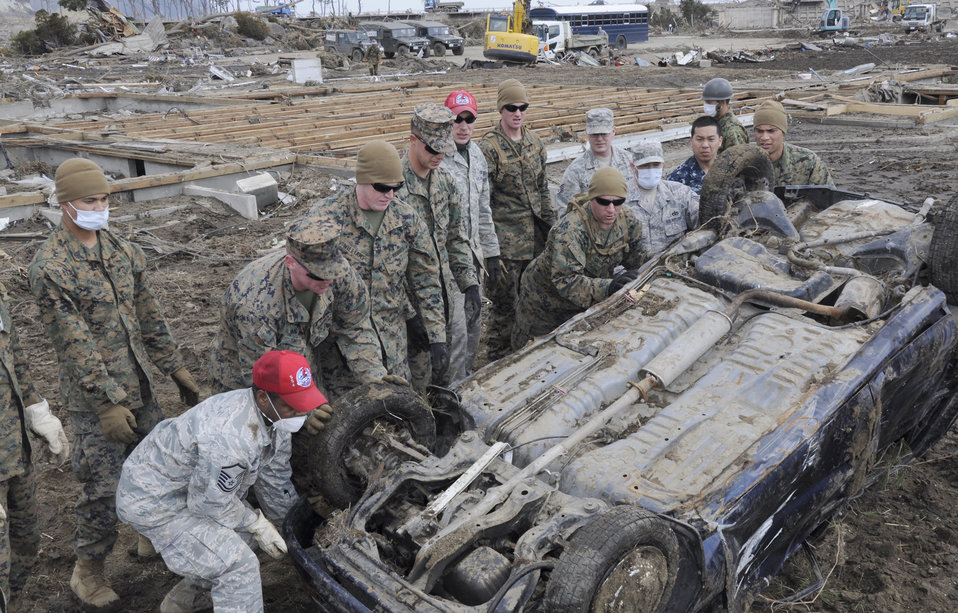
Airmen help with tsunami cleanup

Service members prepare to lift an overturned car March 29, 2011, in Noda Mura, Japan.